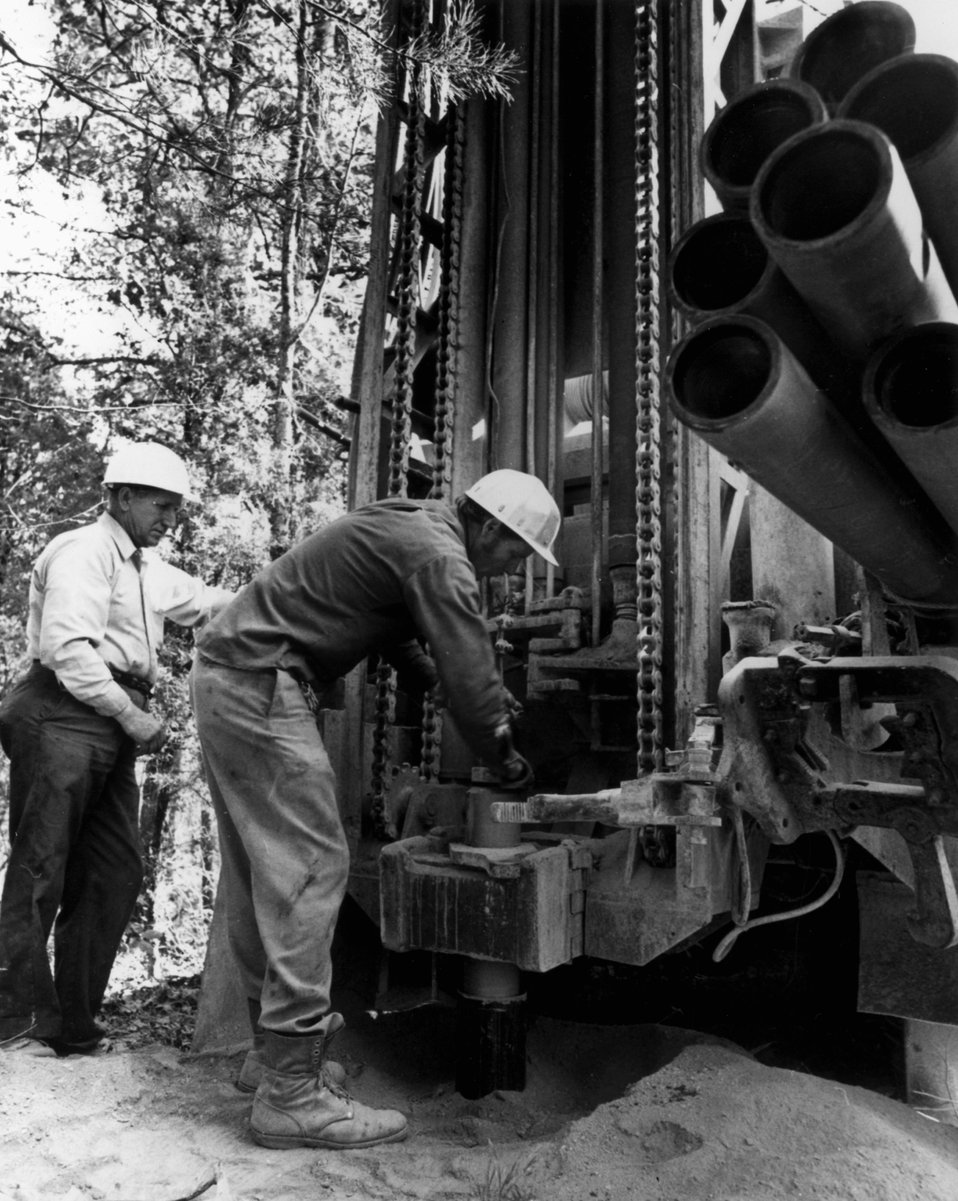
Exploratory core drilling operations to find a suitable location for studying the effect of heat on shale rock are being conducted on the Energy Research and Development Administration's reservation in Oak Ridge, Tennessee as part of a geological study related to ERDA's national program for safe terminal storage of commercial high level nuclear waste. c. 1977